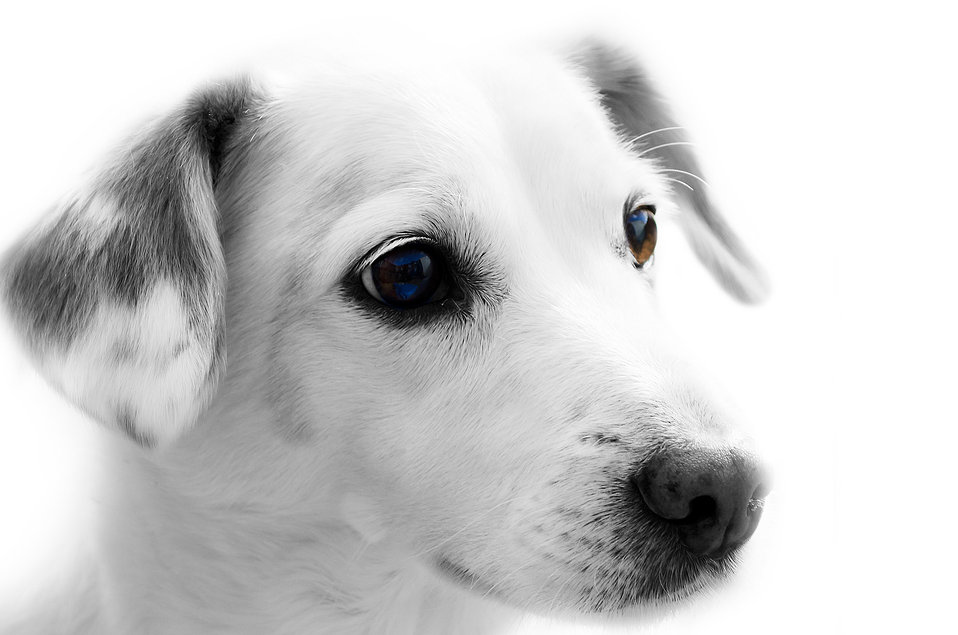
Dog - black and white.